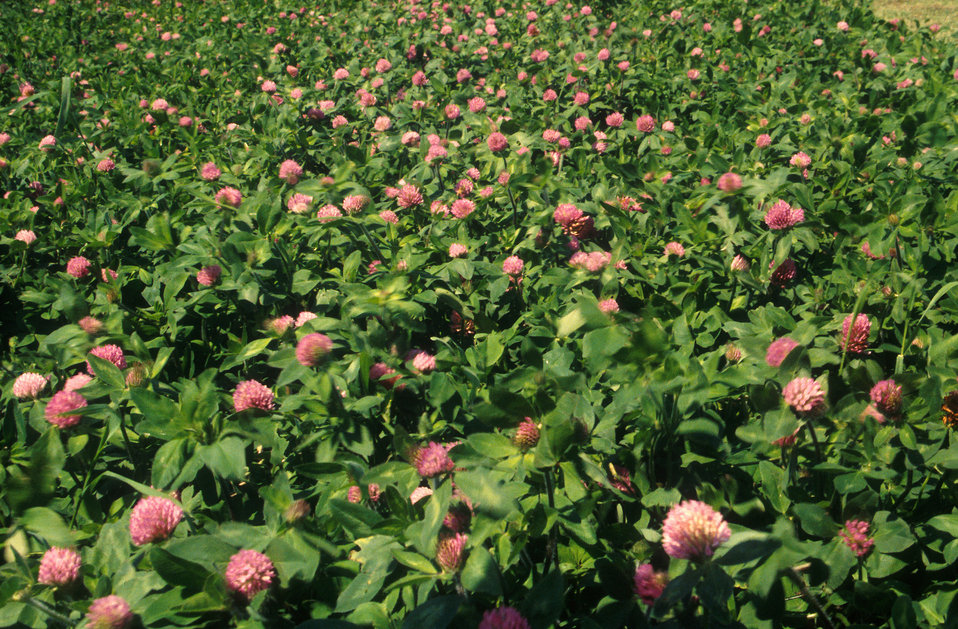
Red clover is widely grown as a fodder crop, valued for its nitrogen fixation, which increases soil fertility. For these reasons it is used as a green manure crop.